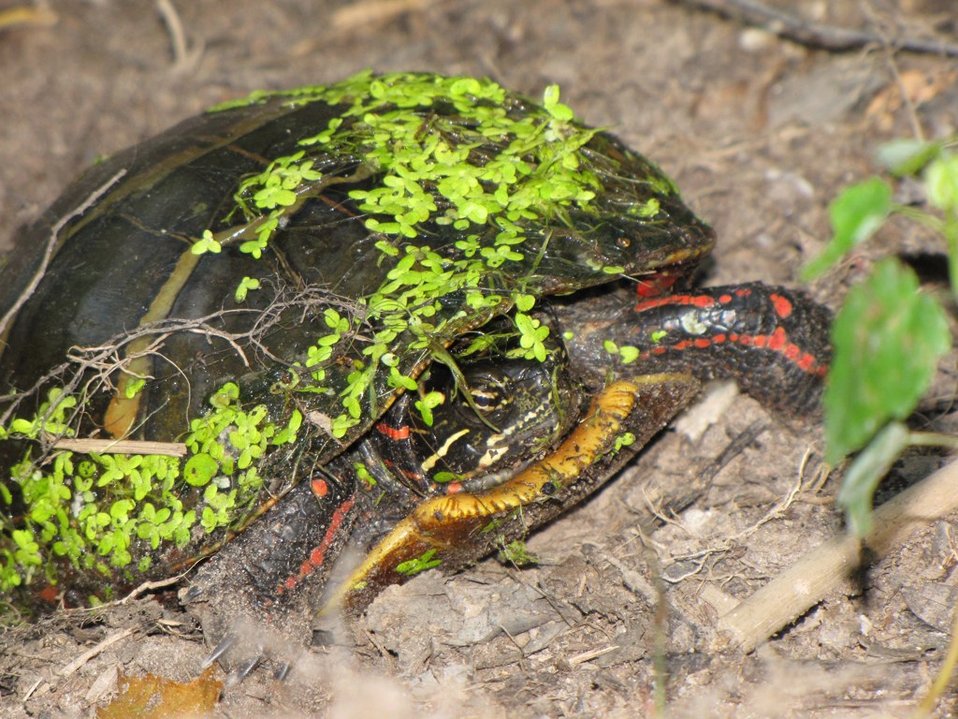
Mattaponi Wildlife Management Area, Virginia

Survey (June 27 - 28, 2012)

Female eastern painted turtle (Chrysemys picta picta).